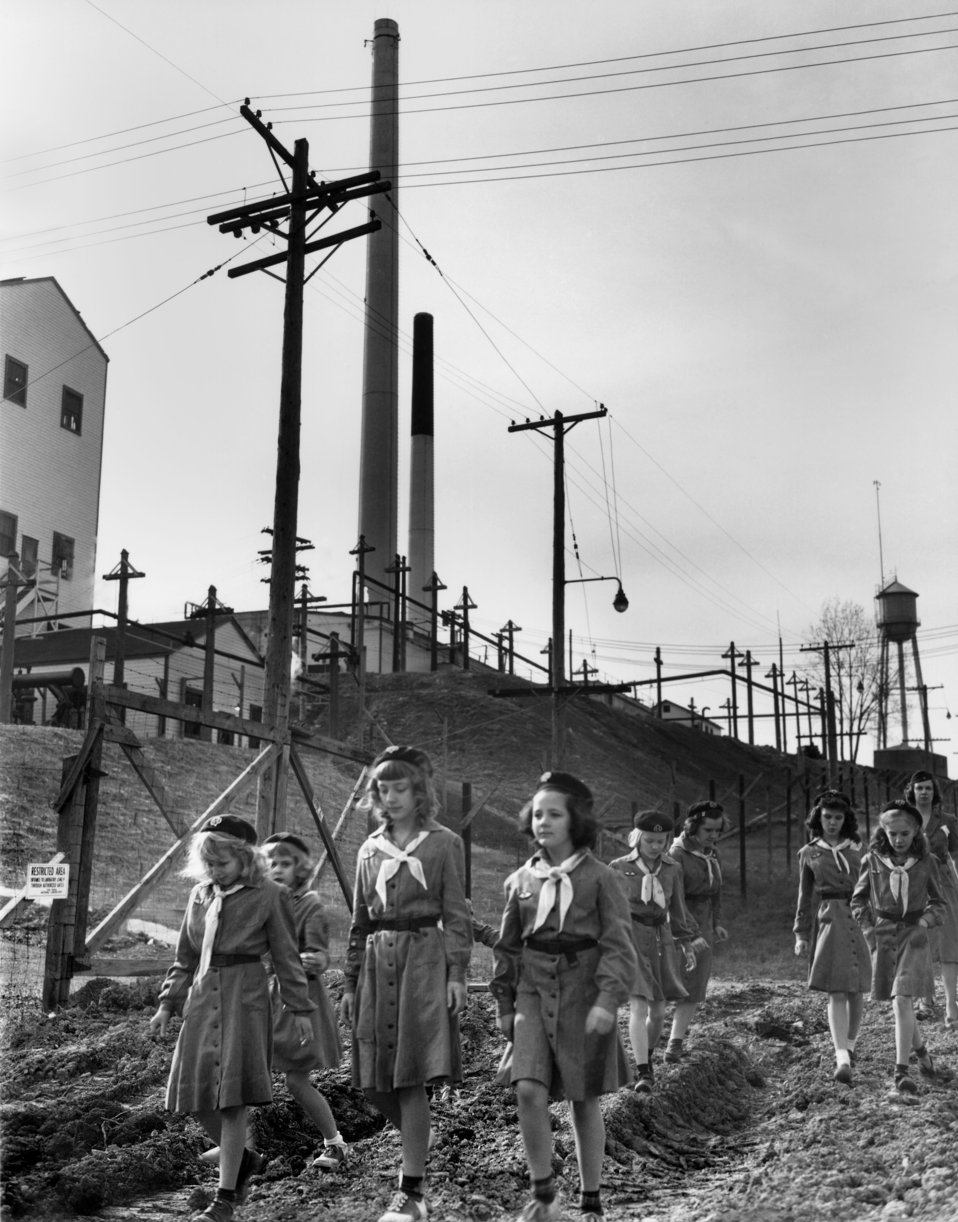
Girl Scouts visit to Oak Ridge National Lab.

6994-2 DOE photo by Ed Wescott

Girl Scouts visit to Oak Ridge National Lab. Oak Ridge Tennessee 6/9/1951